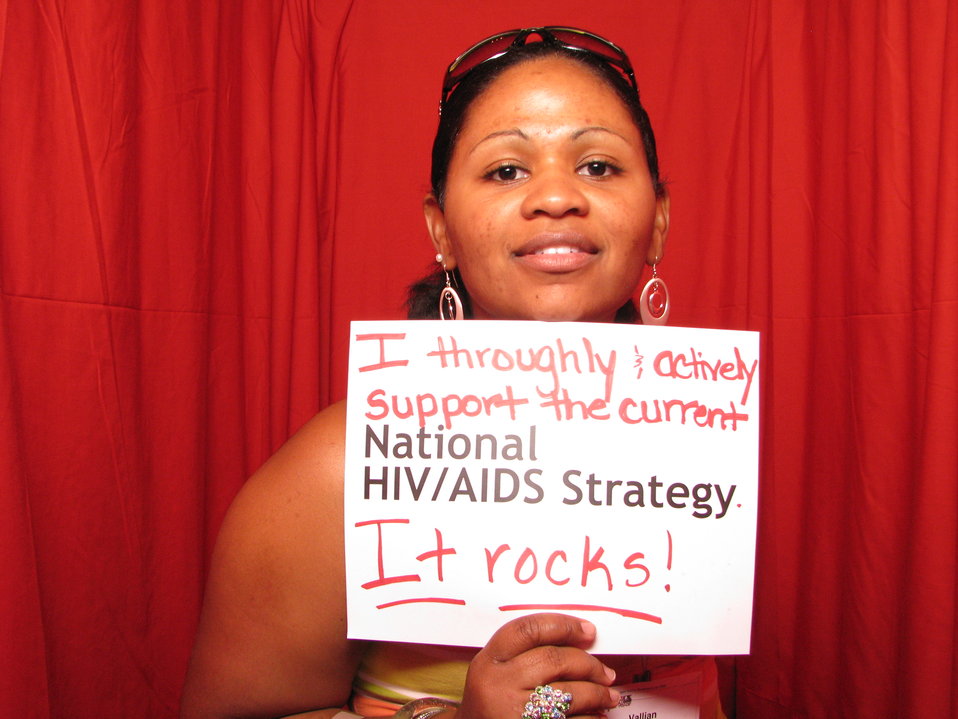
I thoroughly and actively support the current National HIV AIDS Strategy. It rocks!

From the AIDS.gov photo booth at the U.S. Conference on AIDS, September 2010 (Orlando, FL).